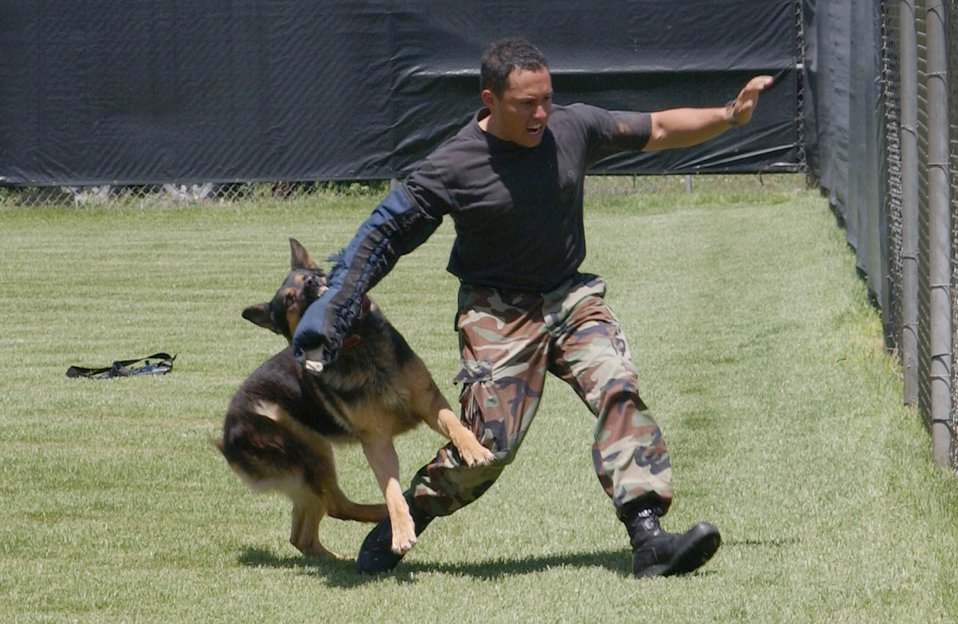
A bite out of training

CANNON AIR FORCE BASE, N.M. -- A security forces Airman trains with a military working dog as part of Police Week activities at the base kennels here May 10.